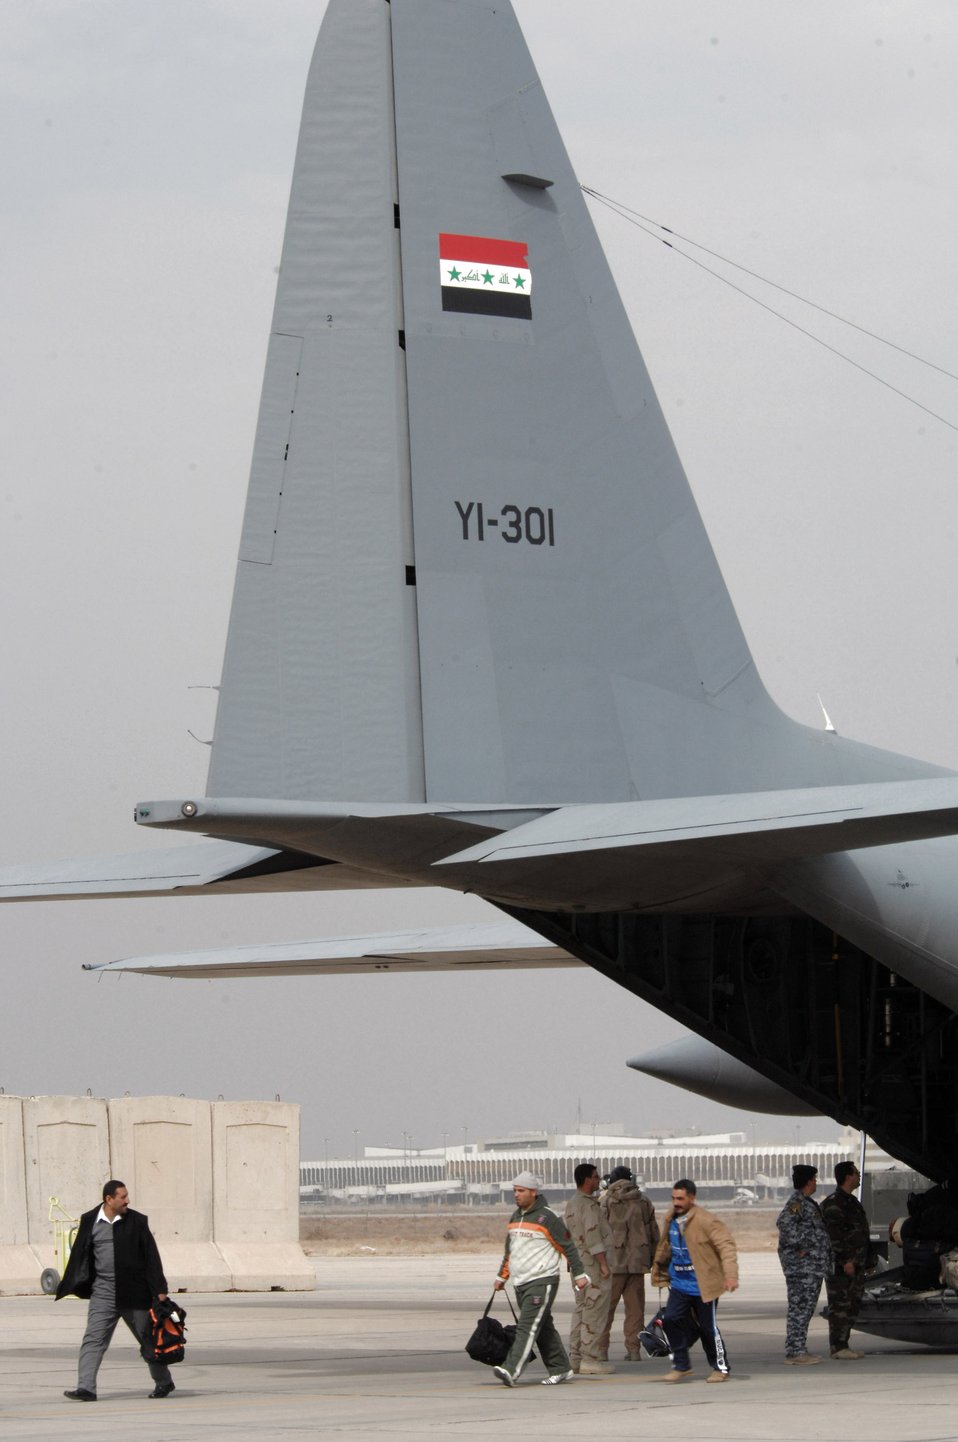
Five Years Later

Newly trained Iraqi policemen get off an Iraqi air force C-130 Hercules Feb. 11 at New Al Muthana Air Base, Baghdad, Iraq . The Iraqi air force at New Al Muthana is trained by U.S. Air Force Airmen assigned to the Coalition Air Force Transition Team. The team's mission is to train, advise and assist the Iraqi air force using embedded Military Transition Teams to support the progressive transition of Counter-Insurgency Air Operations to the Government of Iraq.